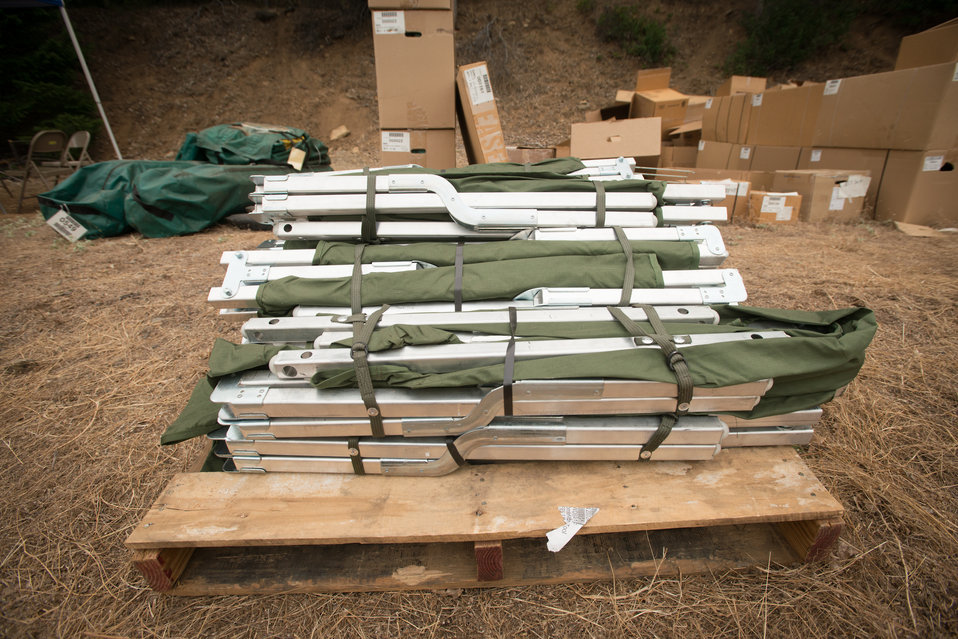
Cots available for firefighters at the Salmon River Complex Fire burning northwest of Sawyers Bar and west of Etna and Yreka, CA in the Klamath National Forest, on Tuesday, Aug. 6, 2013.It is vital that when a firefighter needs fire resistant clothing, a Mccloud Tool, Pulaski Axe, Combi Tool, pumps, connectors and hoses to draw water from a portable reservoirs to pressurize hand line (fire hoses), they go to this centralized point to get readily available item for issue or replacement as needed. These supplies have been shipped from the National Interagency Supply Cache System depots and/or other caches to this and other fires across the nation.